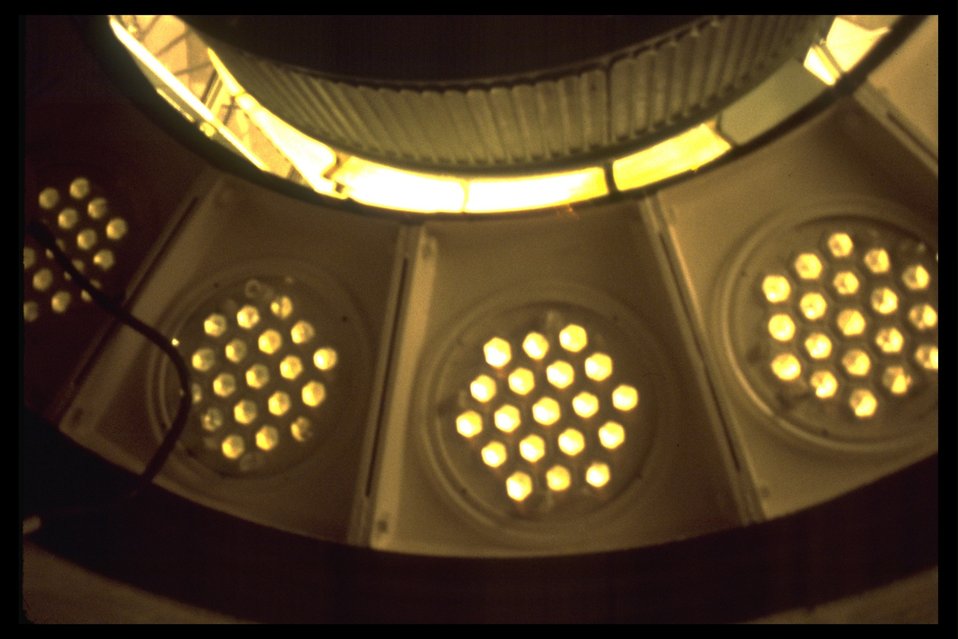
Floor light plates in the Yaquina Head Lighthouse.